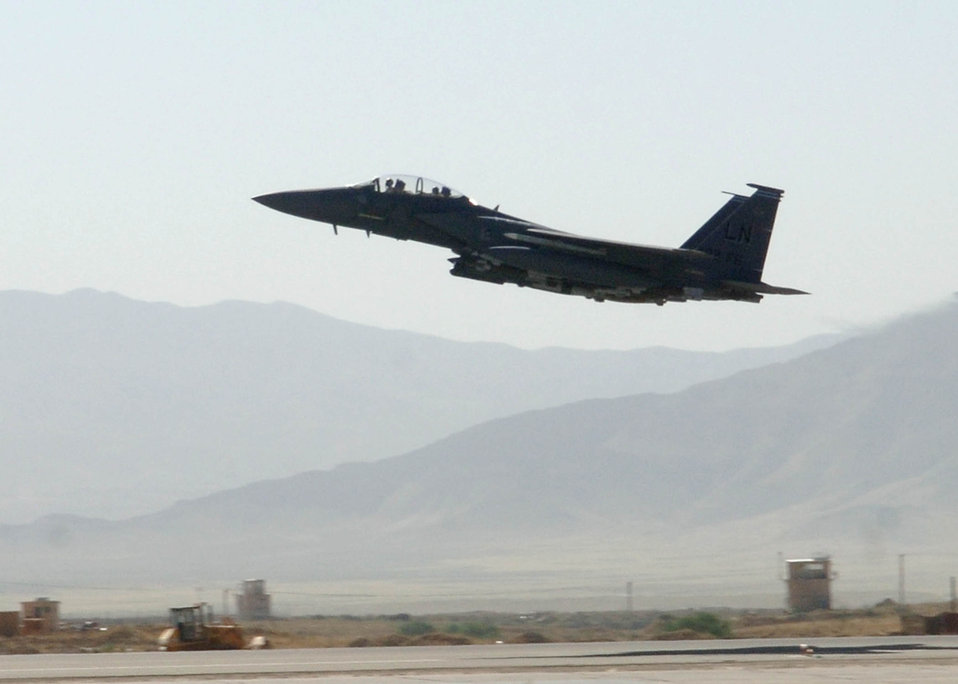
Airpower Summary

An F-15E Strike Eagle takes off from Bagram Airfield, Afghanistan. The F-15E's primary role in Afghanistan is providing close-air support for ground troops. The F-15 is assigned to the 492nd Expeditionary Fighter Squadron deployed from RAF Lakenheath, England.